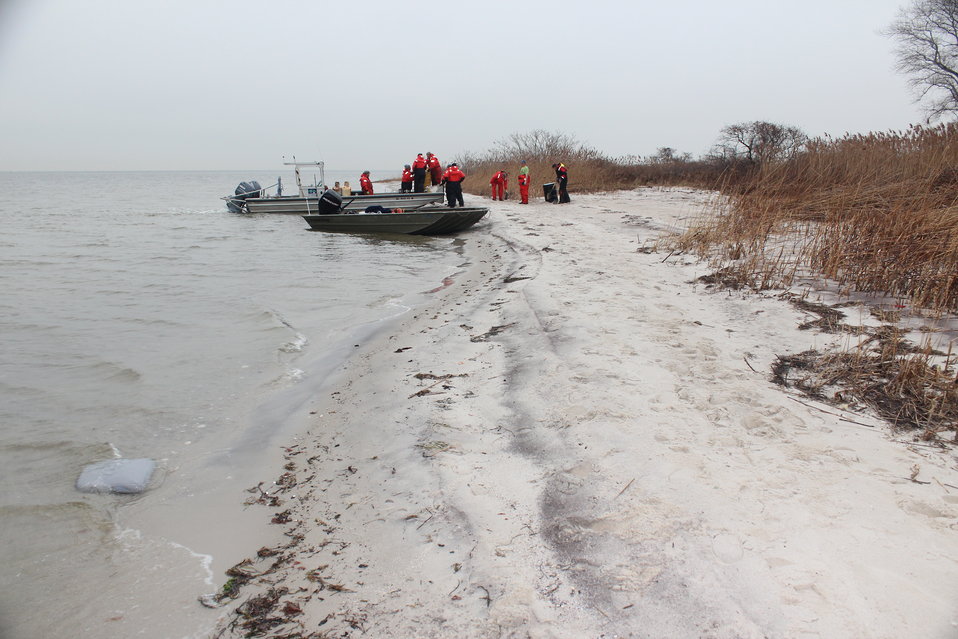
December 8, 2012 Even this beach required a closer look

An oil filled drum had already begun leaking by the time our crews discovered it on Captree Island, just a few feet from the tide line. The leaking drum was placed into a larger ‘overpack’ container, while the leaked oil was collected by sorbent pads. Oil stained sand was also collected for removal.